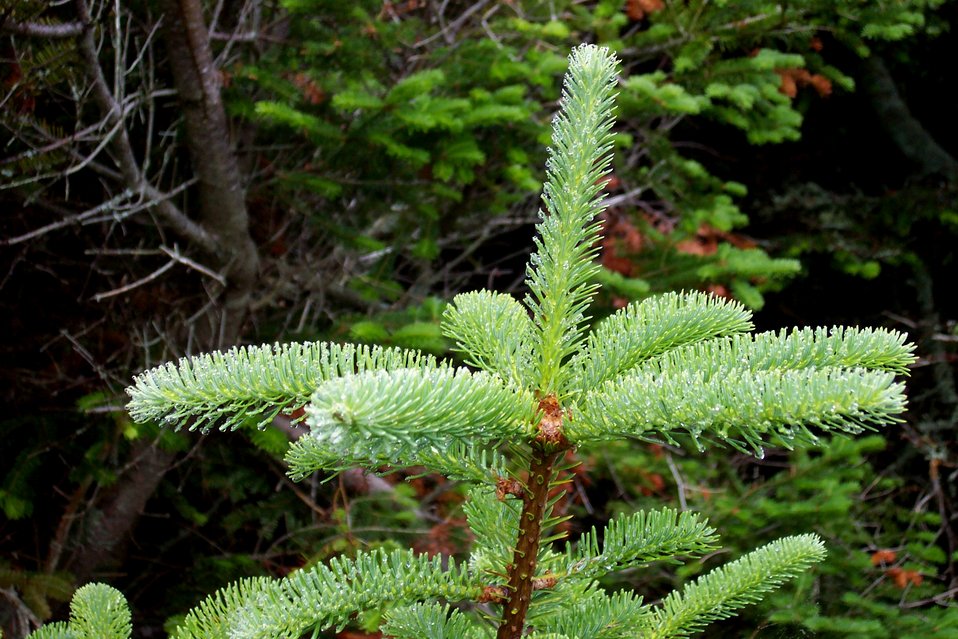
Fog dew on evergreens at West Quoddy Head.